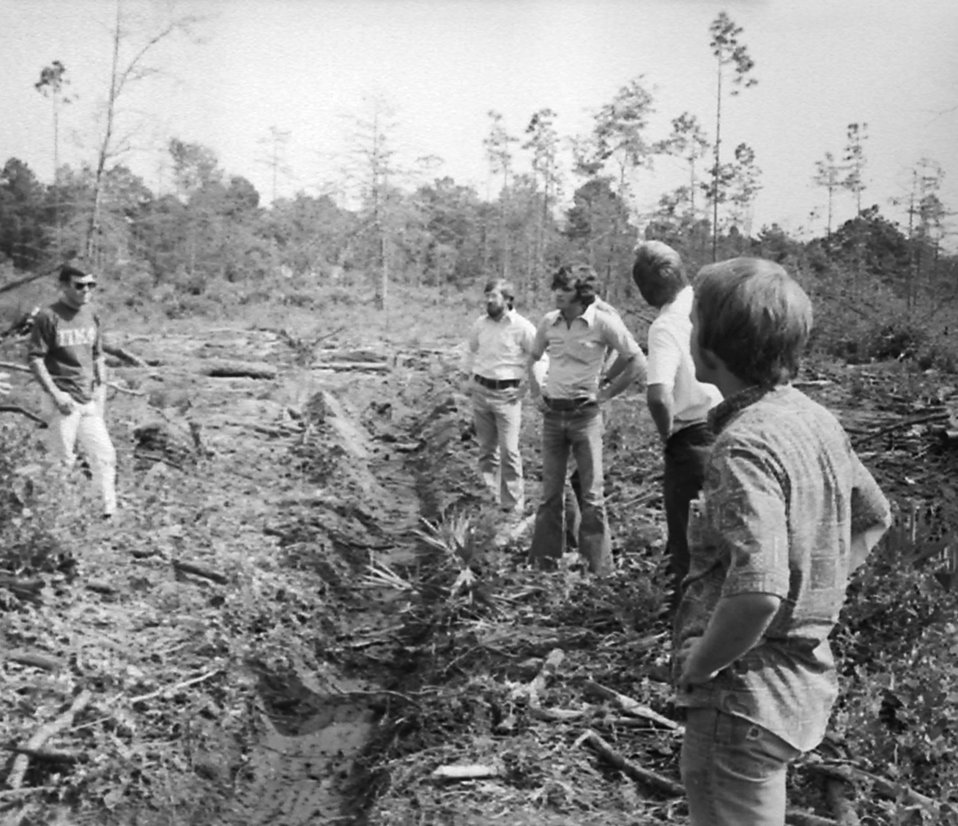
Mosquito control training excersises taking place during the 1970s.